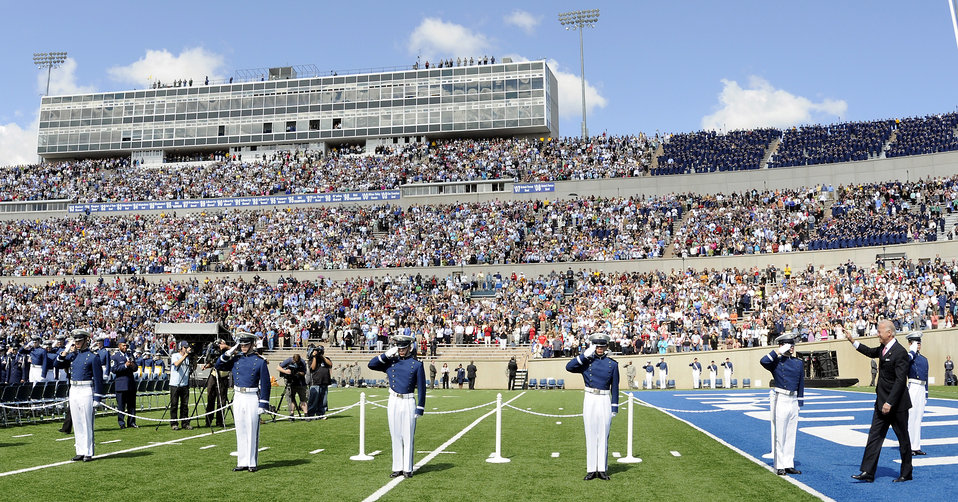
2009 U.S. Air Force Academy graduation

Vice President Joe Biden enters the U.S. Air Force Academy's Falcon Stadium to deliver the commencement address during the Academy Class of 2009 graduation ceremony May 27.